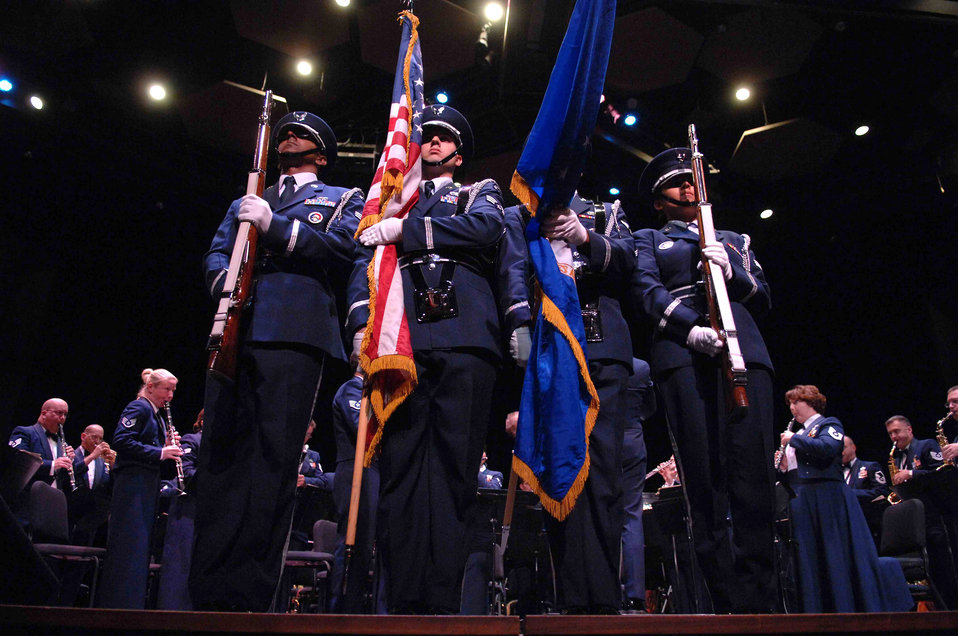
Music to their ears

The Nellis Air Force Base Honor Guard presents the colors during the opening of the Air Force Band of the Golden West performance Oct. 17 at the University of Nevada Las Vegas. The Band of the Golden West, from Travis Air Force Base, Calif., is the only active duty Air Force band west of the Rocky Mountains. They are scheduled to perform five free concerts in the Las Vegas community. The band supports 10 active duty Air Force bases, five Air Force Reserve wings and five recruiting squadrons in California, Washington, Oregon, Idaho and Nevada with more than 500 annual performances.